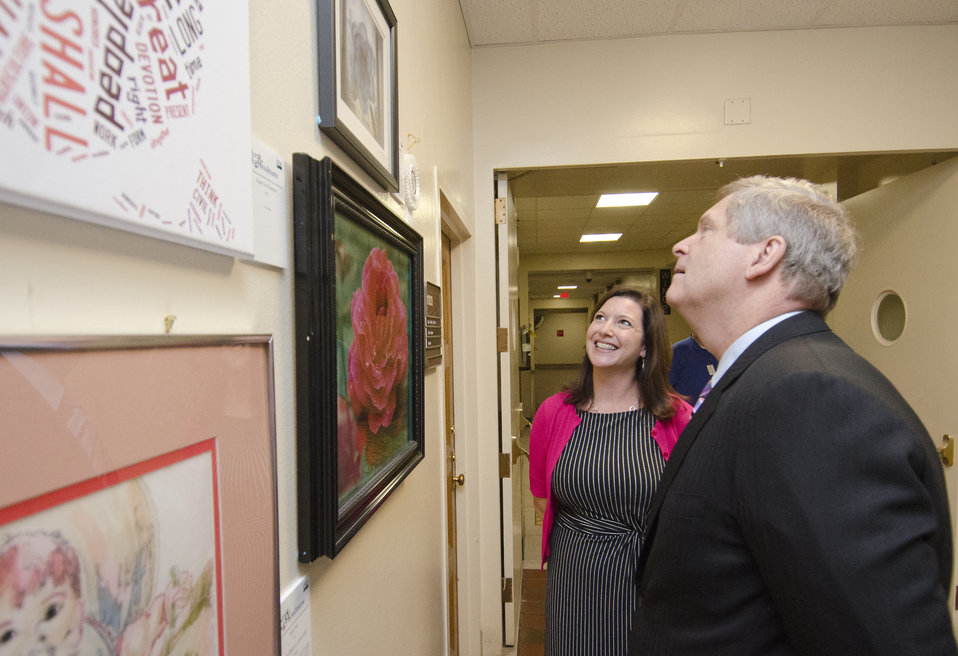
Angela Emrich discribes her artwork to Agriculture Secretary Tom Vilsack during his visit to the gallery of winning entries and some of the employee artists from the inaugural competition for Art and Agriculture, Thursday, May 31, 2012, in the South Building, Washington, D.C. U.S. Department of Agriculture (USDA) full-time and part-time employees submitted art based on ten agricultural themes. The event was part of USDA's 150th Anniversary celebration and the winning artwork is on display from May 15 through December 31, 2012. Artistic expression is a creative outlet that is vital for an individual to grow and develop in their environment.